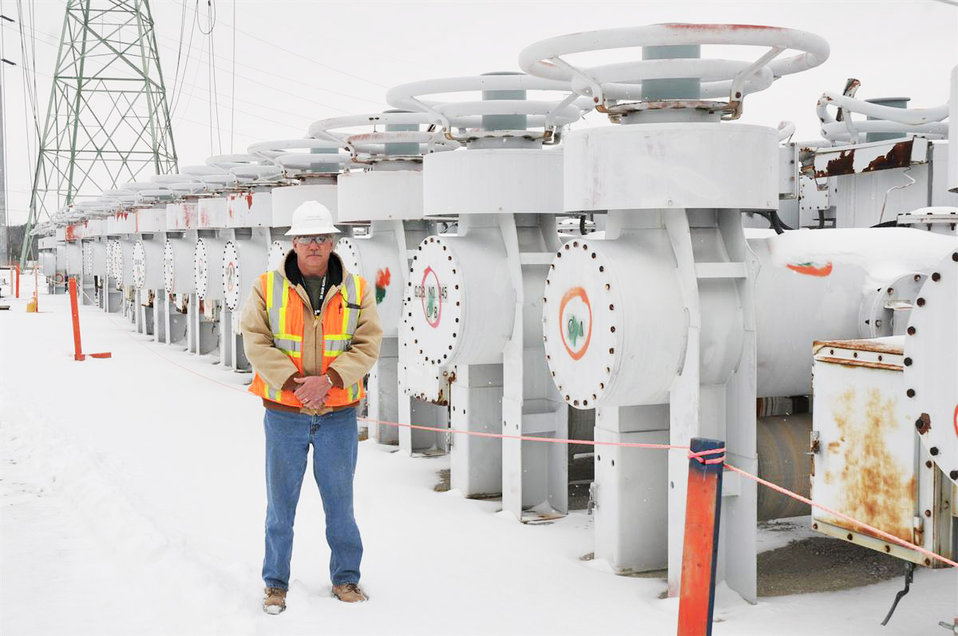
Portsmouth - Brian Klaiber

Strategic planning and effective communication from LATA/Parallax Portsmouth, LLC Superintendent Brian Klaiber were instrumental in removing all components of the 20-acre X-533 Electrical Switchyard and completing the project on schedule. Here, Klaiber stands next to oil circuit breakers removed from the yard.